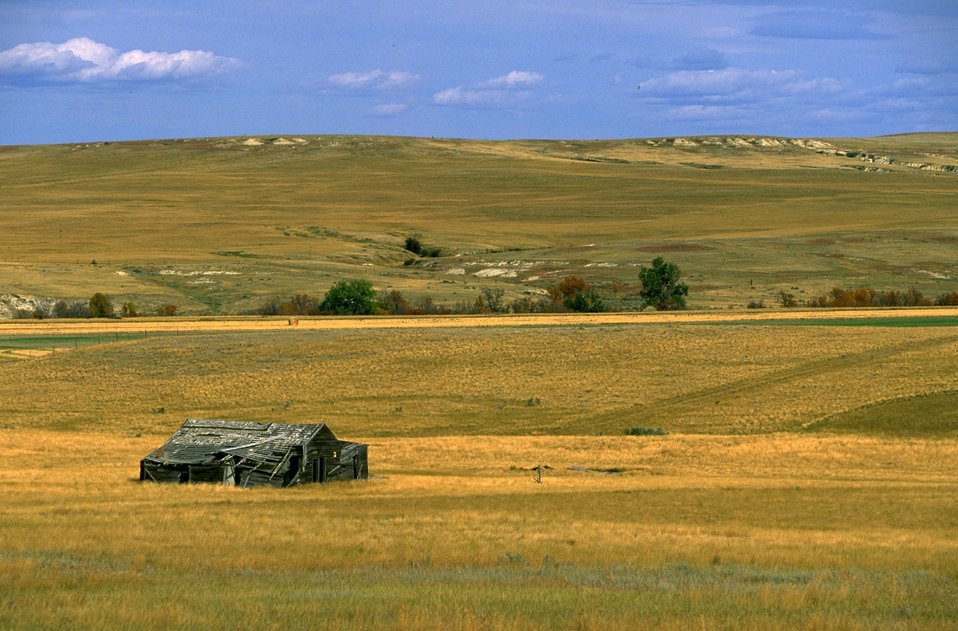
Old Homestead on the eastern Montana prairie